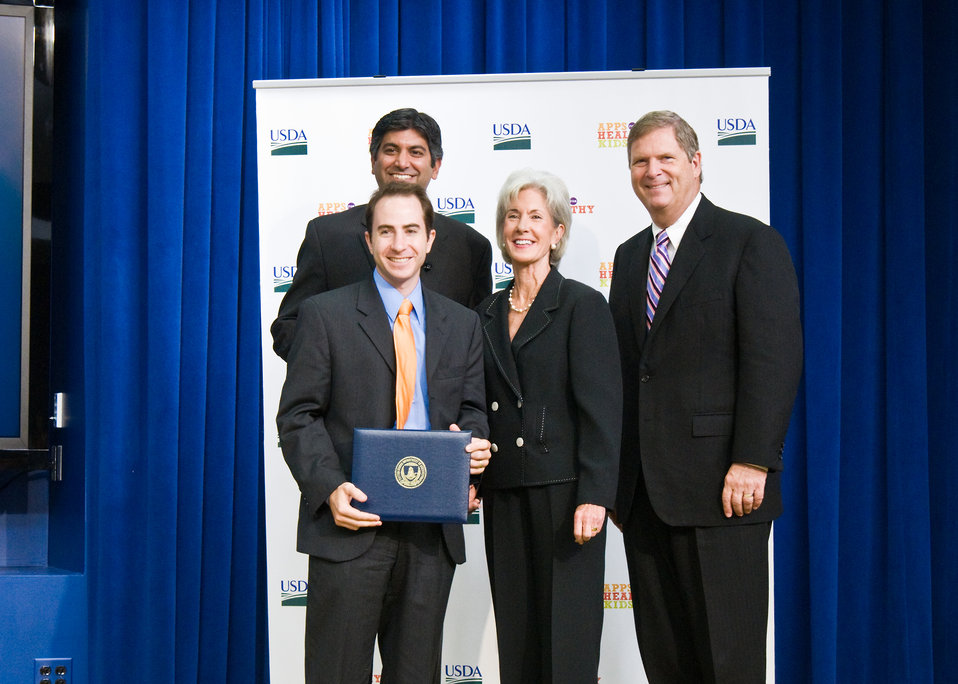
Aneesh Chopra, White House Chief Technology Officer, Health and Human Services Secretary Kathleen Sebelius and Agriculture Secretary Tom Vilsack present Second Prize to John Ferrara, Eagleville, Pennsylvania, Team Leader of the team that developed the game 'Fitter Critters,' of The Apps for Healthy Kids competition at the White House, in Washington, DC, Wednesday, September 29, 2010. The Apps for Healthy Kids competition is part of First Lady Michelle Obama’s Let’s Move campaign to end childhood obesity within a generation. The competition challenges software developers, game designers, students and other innovators to develop fun and engaging software tools and games to urge children, especially “tweens” (children ages 9-12) – directly or through their parents – to eat better and be more physically active. In 'Fitter Critters,' children are given the responsibility to make nutritional choices for a virtual pet. Meters showing daily nutritional requirements and limits fill as the player gives the critter food. Critters who are consistently served more nutritious diets will lead healthier and more prosperous lives. USDA Photo 10di1506-113 by Bob Nichols.